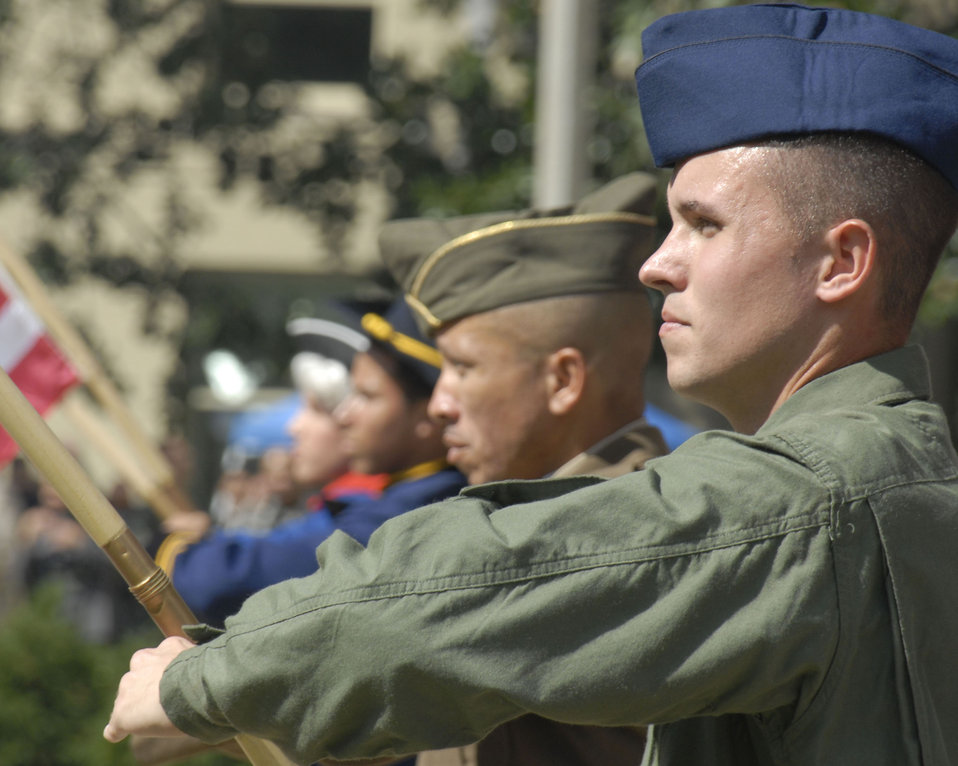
Air Force celebrates 60th anniversary

Members of the Air Force Tops in Blue pay tribute to the heritage of the American flag during a performance at the Air Force's 60th anniversary celebration in the Pentagon courtyard Sept. 18.